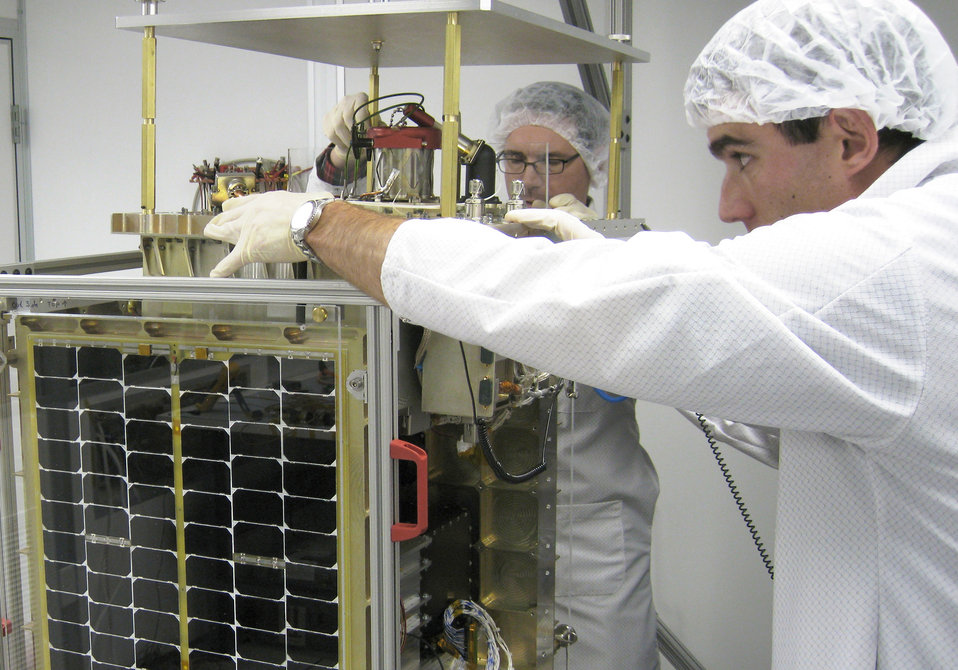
Cadet-built satellite to launch Nov. 19

Pat O'Grady from InStar Engineering and Eric Ehrbar from Busek Inc. confirm FalconSAT-5's fit check with its main payload, the Space Plasma Characterization Source, Sept. 28, 2009, at the U.S. Air Force Academy in Colorado Springs, Colo. FalconSAT-5 is an $11-million program sponsored by the Air Force Research Laboratory, headquartered at Wright-Patterson Air Force Base, Ohio. It is scheduled to launch from Kodiak Launch Complex, Alaska, Nov. 19, 2010.